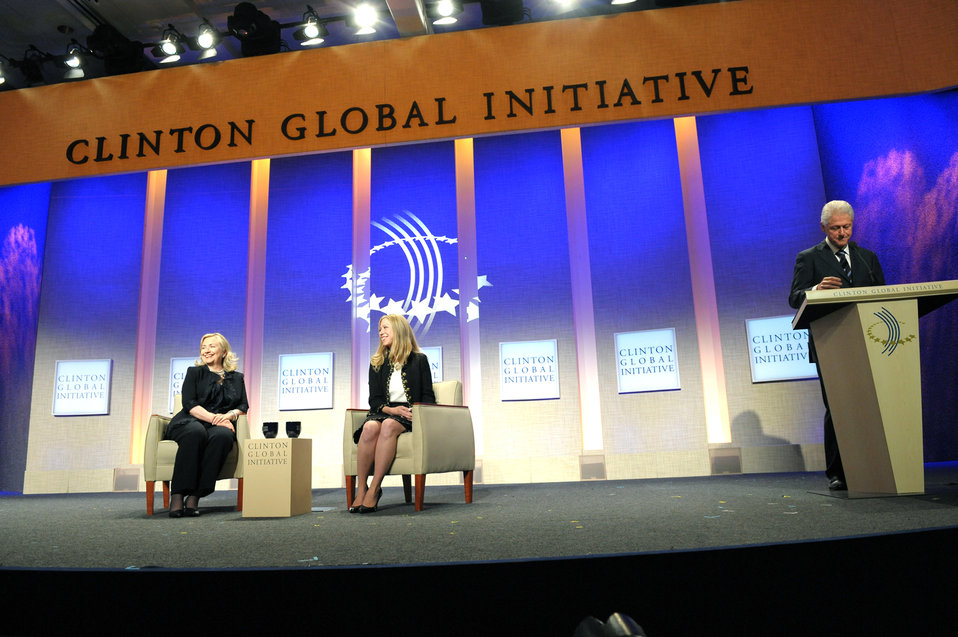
Secretary Clinton and Chelsea Clinton Participate in the Clinton Global Initiative Annual Meeting

U.S. Secretary of State Hillary Rodham Clinton and Chelsea Clinton participate in the Clinton Global Initiative Annual Meeting and hold a one-on-one “conversation” during the Closing Plenary, at the Sheraton Midtown Hotel in New York, New York, on September 22, 2011.